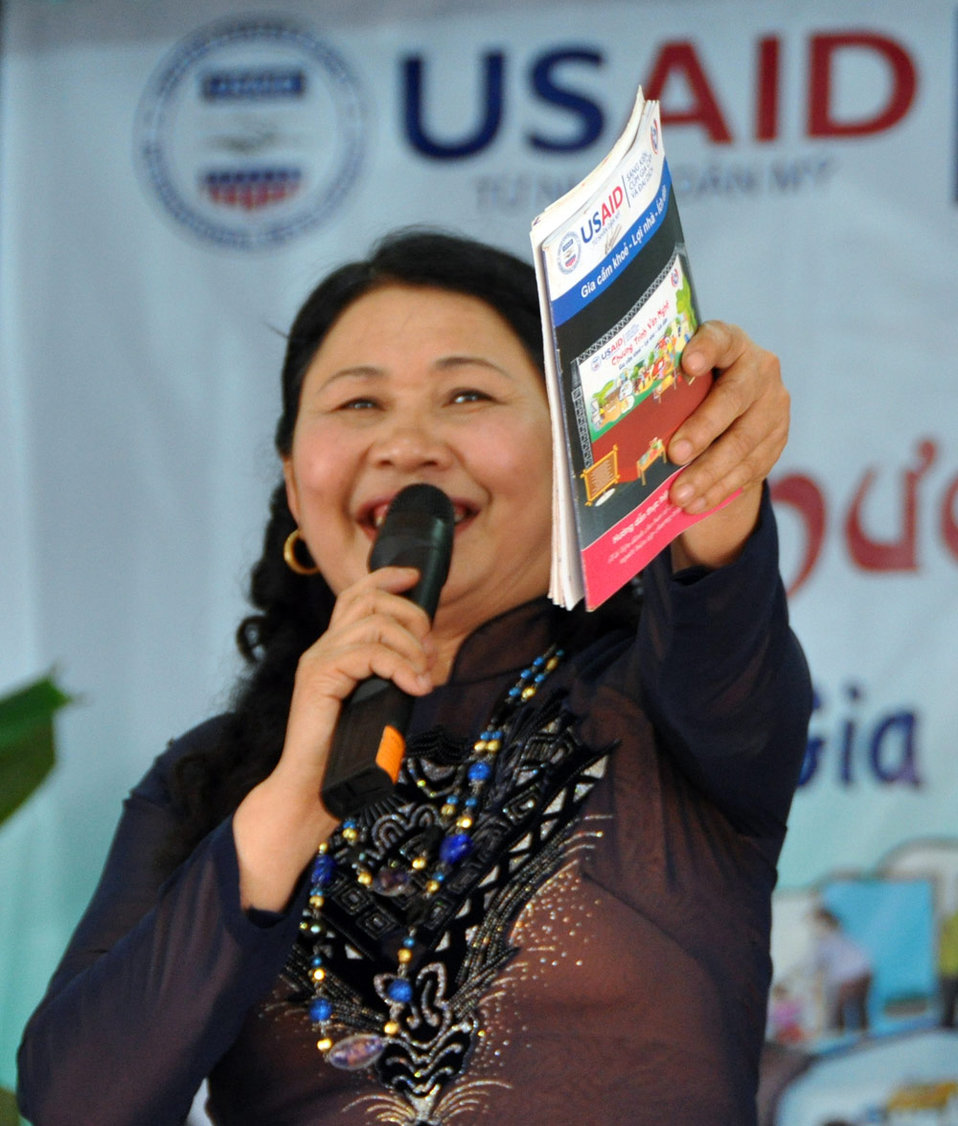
Residents in Vietnam's Tien Ngoai Commune, Duy Tien District, Ha Nam Province, discuss ways to prevent and control avian and pandemic influenza.

Community members take the lead in organizing energetic edutainment, including song, dance, drama, and quiz questions.